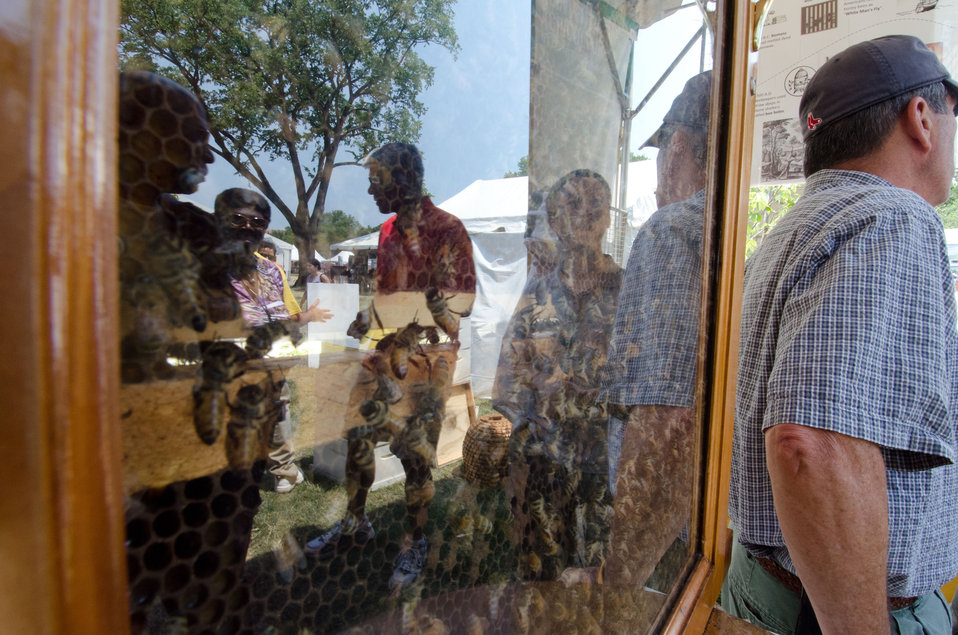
Montgomery County Beekeeper Association, amateur beekeeper Dave Moynihan is seen reflected in a glass encased bee colony as he talks to visitors about bee life cycle, agricultural importance and honey products at 2012 Smithsonian Folklife Festival, Thursday, June 28, 2012 on the National mall in Washington, D.C. One of the three themes this year is “Campus and Community.” It celebrates the 150 years of the USDA and the Land-Grant University System. The U.S. Department of Agriculture (USDA) and the Land-Grant system extend education across the country, contributing to American agriculture success and rural prosperity. “Campus and Community” has demonstrations, discussions, hands-on activities, and entertainment to that showcase the many ways that this partnership works to improve American agriculture and rural life.